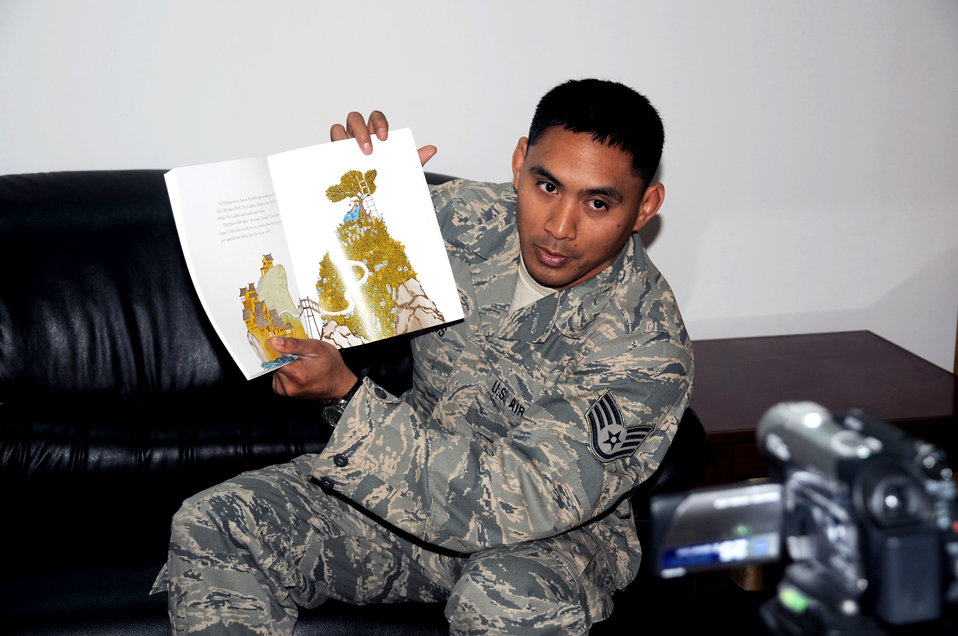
Deployed Airmen keep home communication lines open through reading program

Staff Sgt. Gavin Ramos is video-recorded April 8, 2010, while reading a book for his children at a non-disclosed base in Southwest Asia. Sergeant Ramos was the first Airman at the 380th Air Expeditionary Wing to participate in the USO's United Through Reading program. The program allows a deployed servicemember to read a book while being recorded, and the book and a DVD are sent home to a child to view and follow along. Sergeant Ramos is a services journeyman with the 380th Expeditionary Force Support Squadron. He is deployed from the 154th Force Support Squadron at Joint Base Pearl Harbor-Hickam, Hawaii.